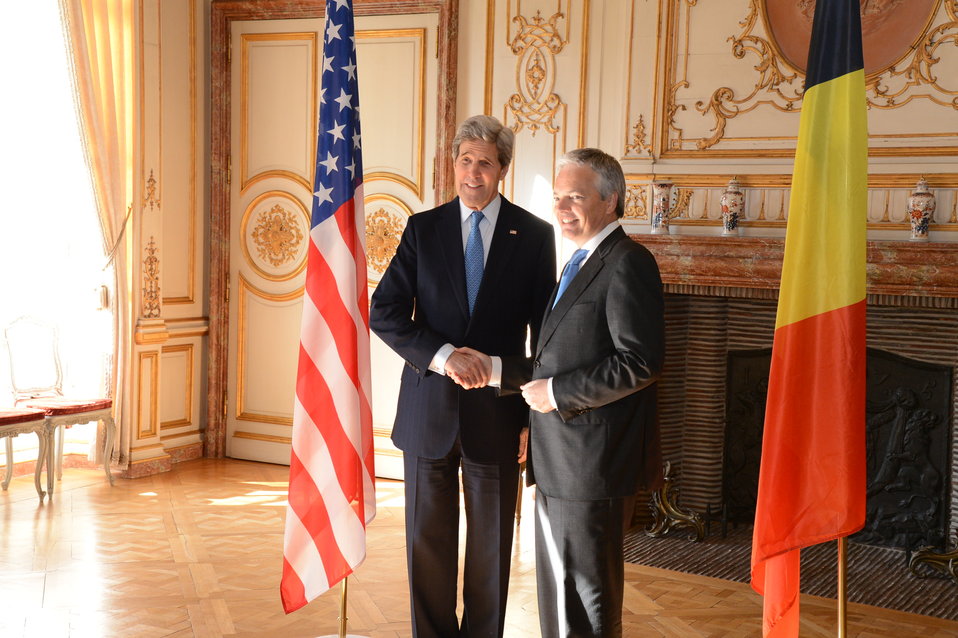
Secretary Kerry Meets With Belgian Foreign Minister Reynders

U.S. Secretary of State John Kerry meets with Belgian Foreign Minister Didier Reynders at Egmont Palace in Brussels, Belgium, on April 24, 2013.